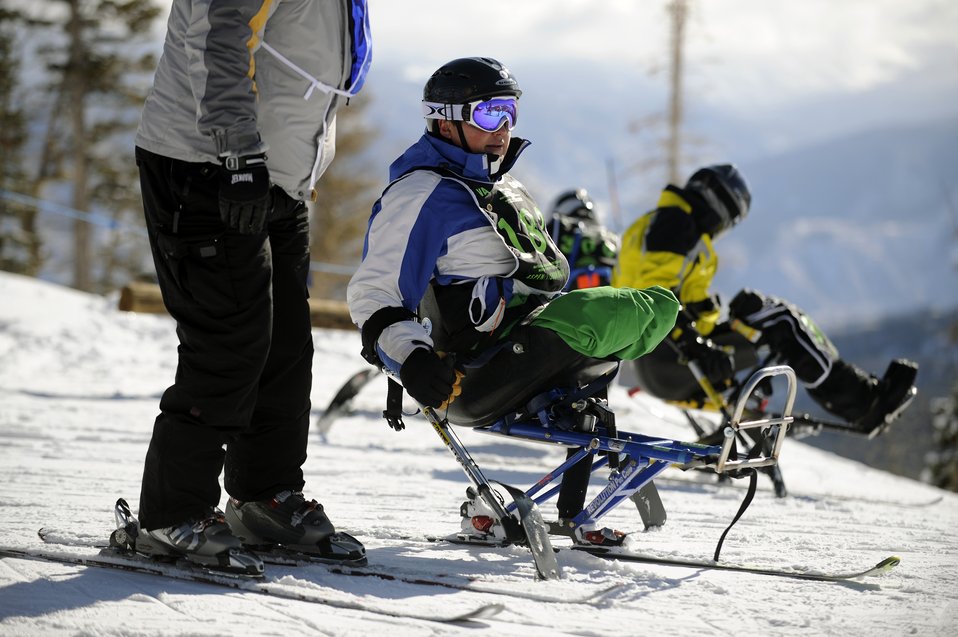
23rd National Disabled American Veterans Winter Sports Clinic

Mark Finken and Senior Airman Kevin Krogh check out the view from Sam's Knob Apr. 2 during the 23rd National Disabled American Veterans Winter Sports Clinic in Snowmass Village, Colo. Airman Krogh lost both legs in a major car accident in 2007 and this is his first year attending the sports clinic. Airman Krogh is assigned to Fort Sam Houston in San Antonio. Finken is a ski instructor for the sports clinic.